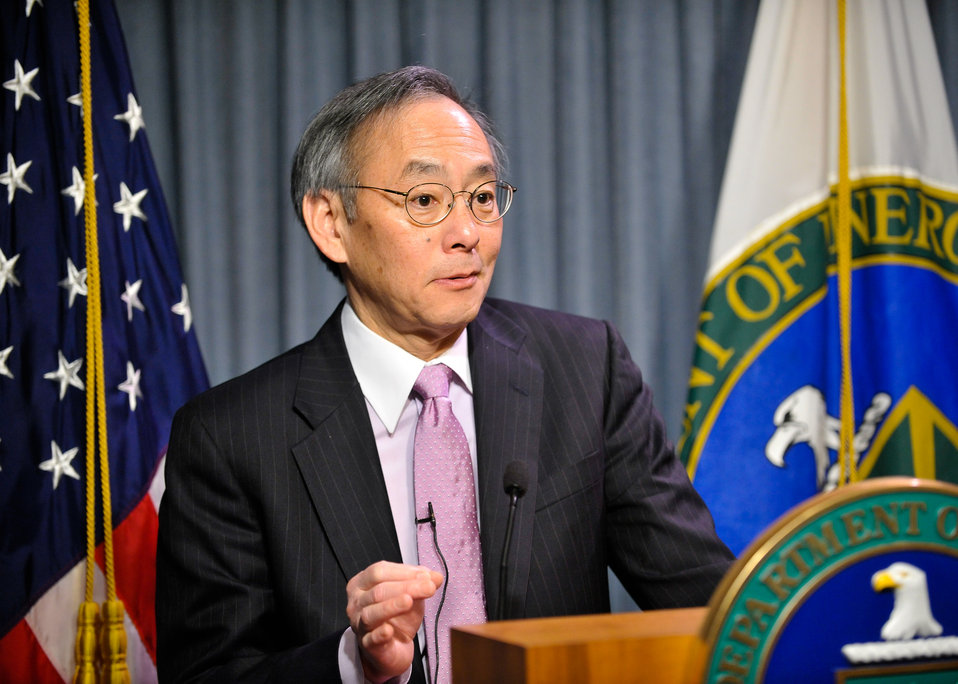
Energy Matters Online Townhall 4 of 5

Secretary Steven Chu hosts an online town hall to discuss President Obama's clean energy and innovation agenda.